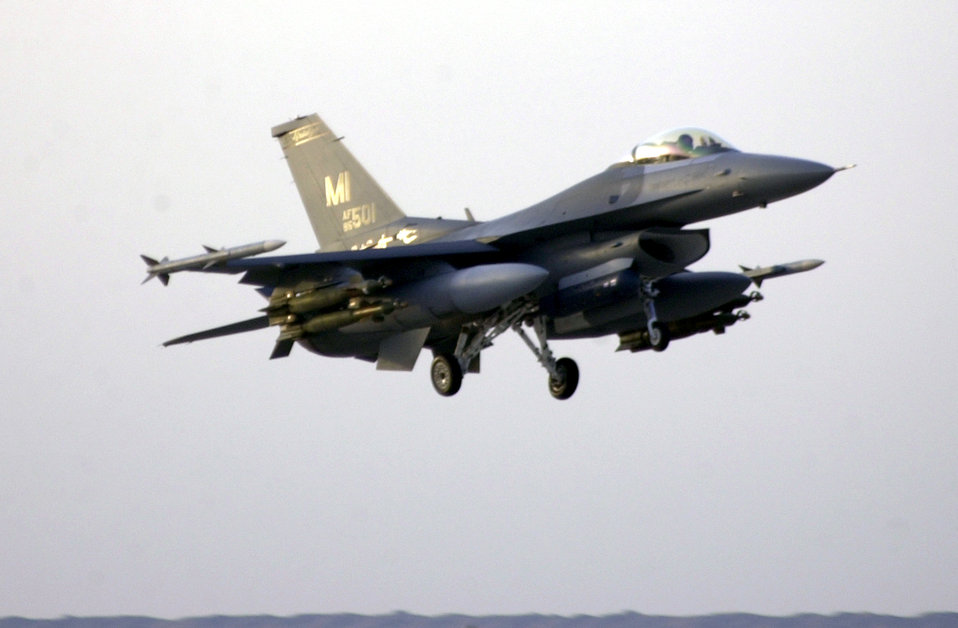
Freedom falcon

OVER IRAQ -- An F-16 Fighting Falcon flies through the sky here April 28 on a mission in support of Operation Iraqi Freedom. The F-16 is assigned to the Michigan Air National Guard's 107th Fighter Squadron at Selfridge Air National Guard Base.